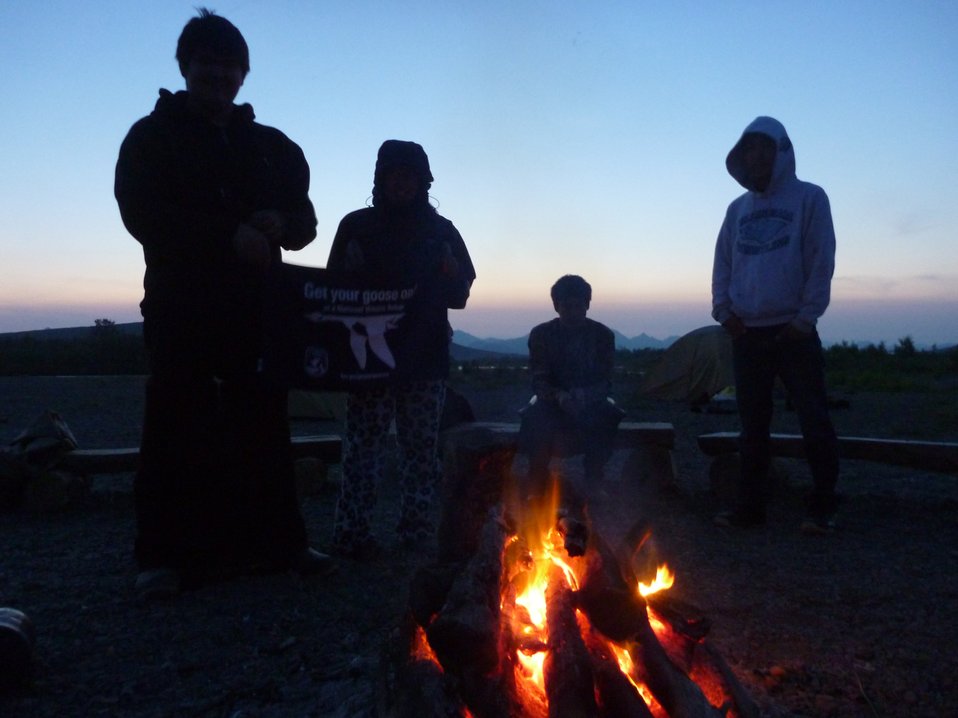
GYGO! - Alaska Style!

These youngsters Get Their Goose On! at Togiak National Wildlife Refuge in southwest Alaska.

The refuge supports 35 species of fish, 30 species of terrestrial mammals, 17 species of marine mammals, and 201 bird species.